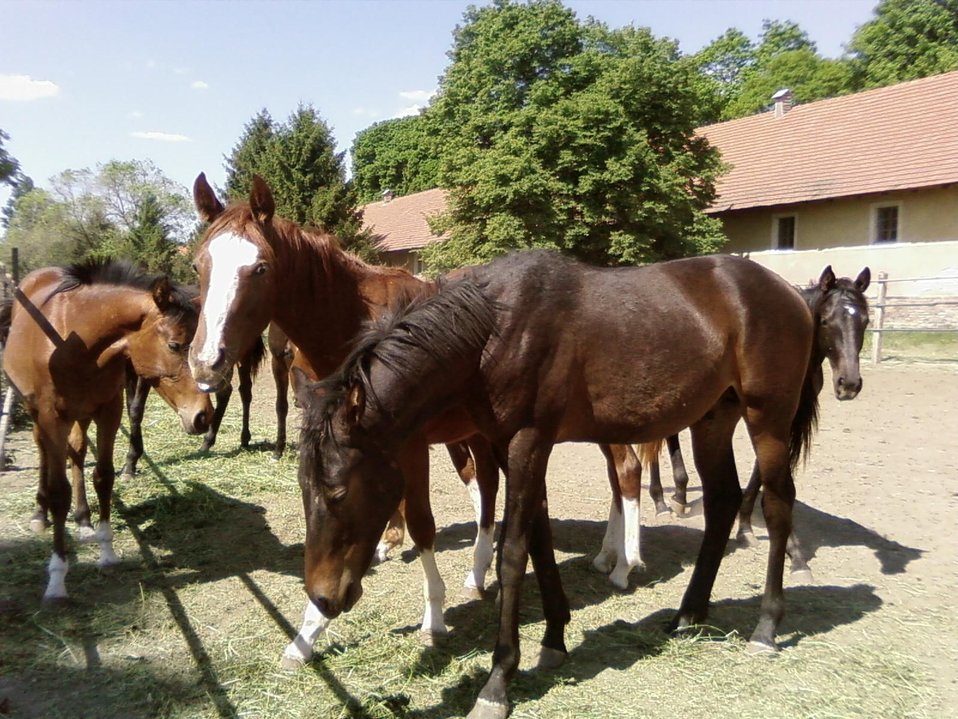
English:
Image title: Beautiful horse Image from Public domain images website, http://www.public-domain-image.com/full-image/fauna-animals-public-domain-images-pictures/horses-public-domain-images-pictures/beautiful-horse.jpg.html